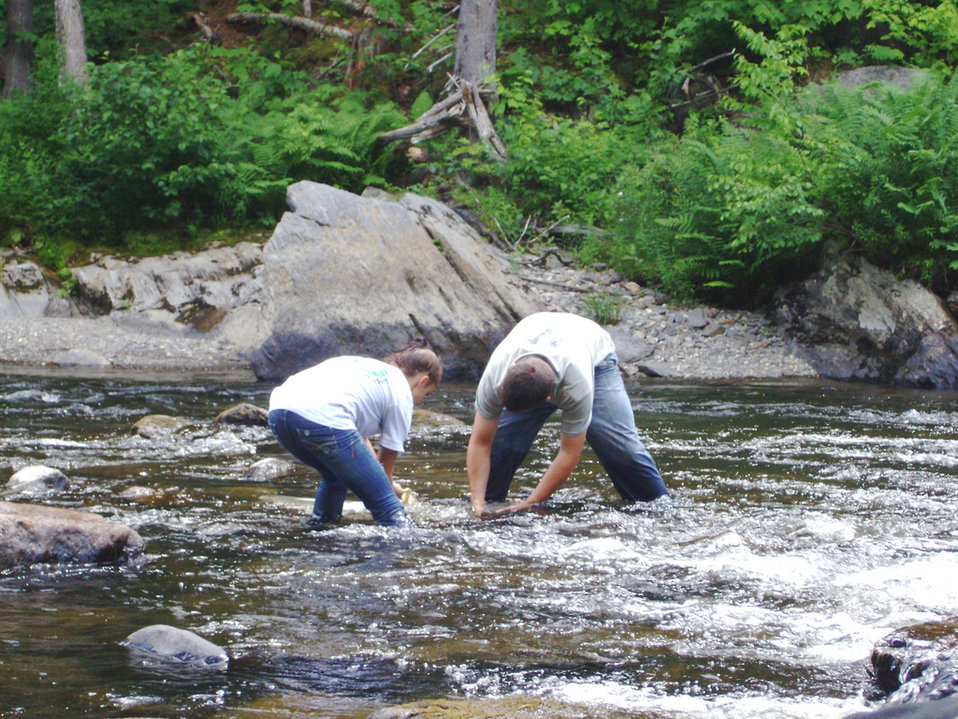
Looking for salamanders

U.S. Fish and Wildlife Service